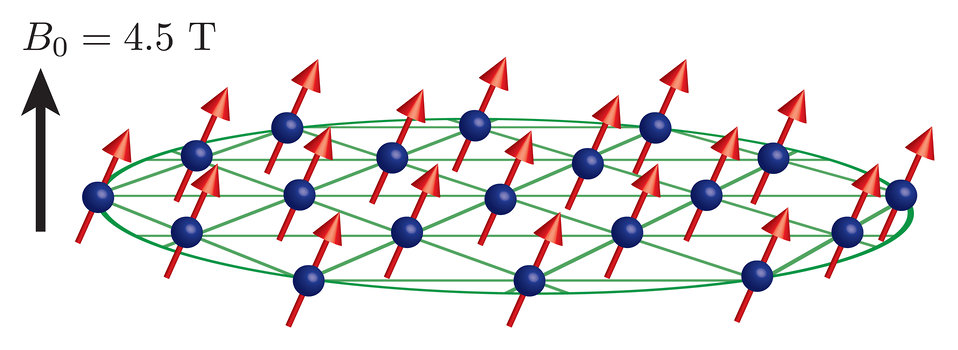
Quantum Simulator Illustration

The NIST quantum simulator permits study of quantum systems that are difficult to study in the laboratory and impossible to model with a supercomputer. The heart of the simulator is a two-dimensional crystal of beryllium ions (blue spheres in the graphic); the outermost electron of each ion is a quantum bit (qubit, red arrows). The ions are confined by a large magnetic field in a device called a Penning trap (not shown). Inside the trap the crystal rotates clockwise.